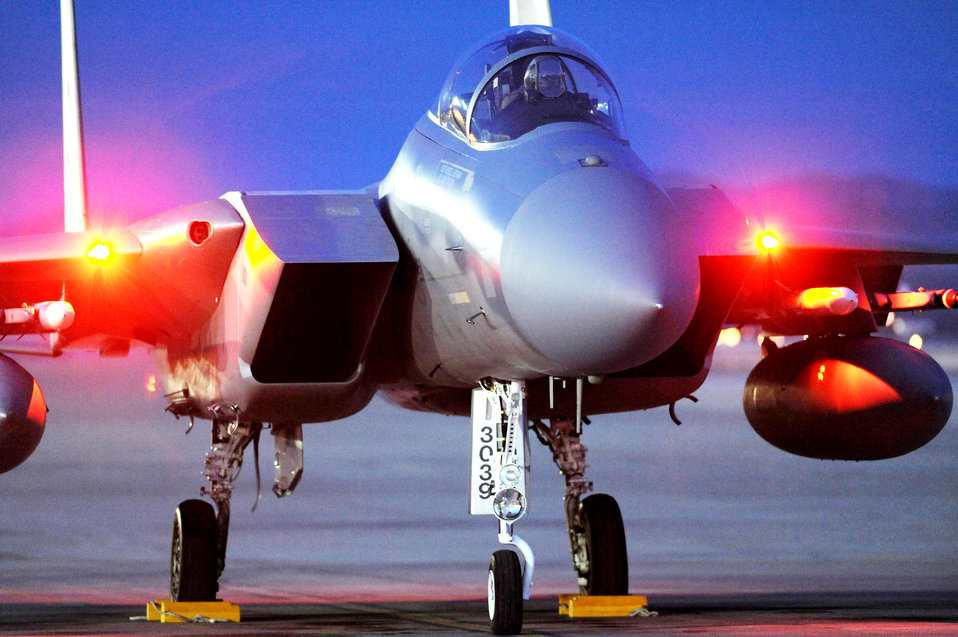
Las Vegas lights

Waiting for the chocks to be pulled, an F-15 Eagle pilot prepares to depart the flightline for a night training mission Feb. 2, 2010, during Red Flag at Nellis Air Force Base, Nev. The aircraft is assigned to the 44th Fighter Squadron at Kadena Air Base, Japan.